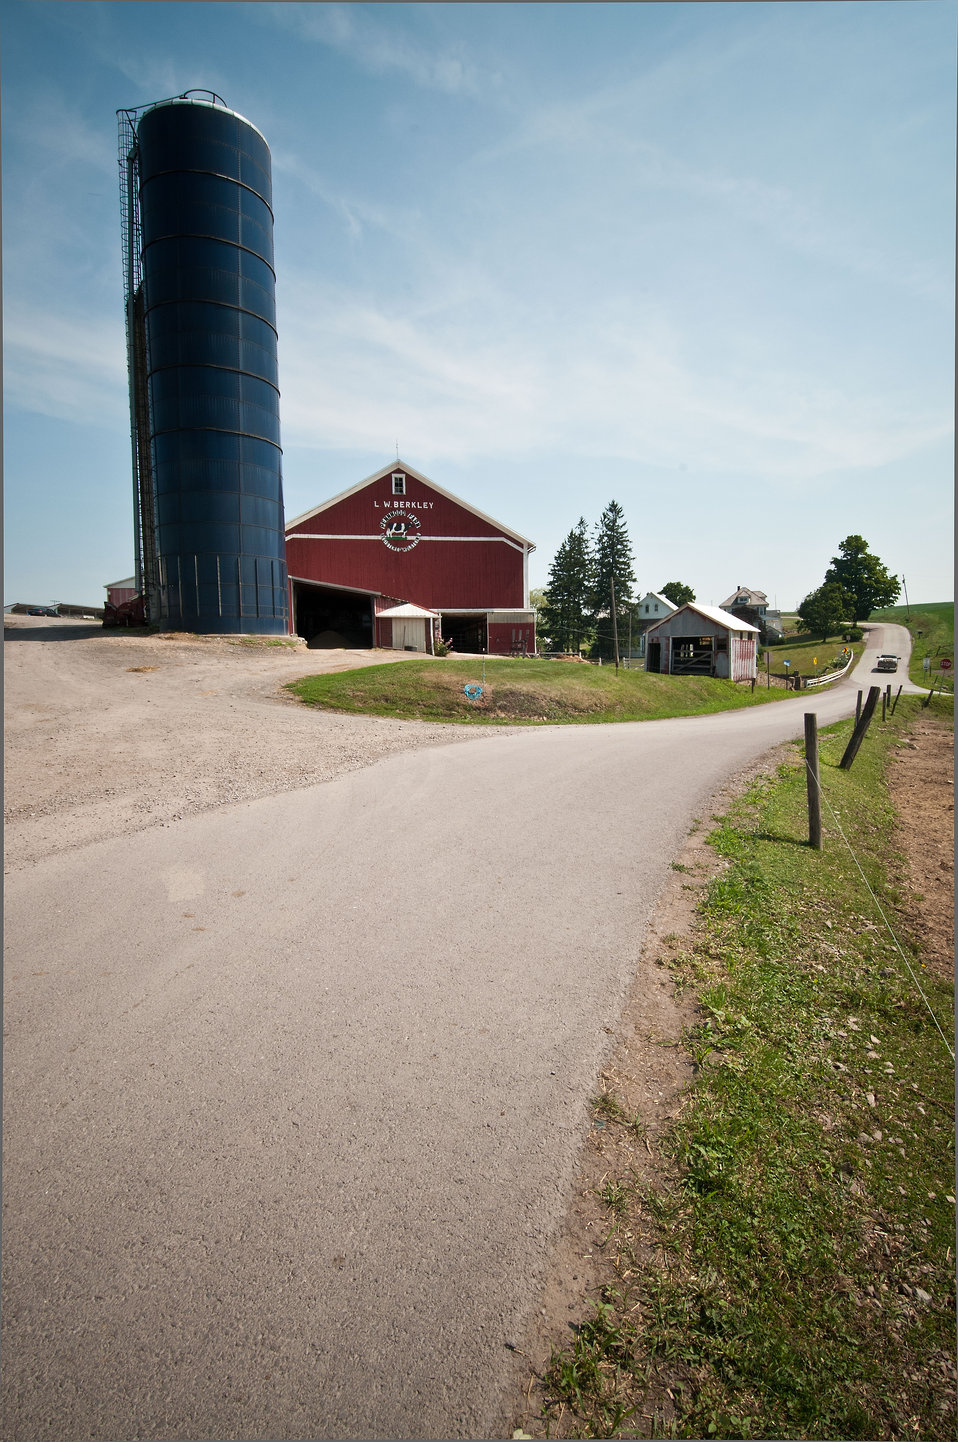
Pennwood Dairy Farms owned and operated by the Stoltzfus family in Berlin, PA. The dairy uses an anaerobic digester to produce energy for the dairy. The digester produces one million kilowatt hours; half of the energy needs of the farm, the other five hundred thousand kilowatt hours are sold back to the grid. An anaerobic digester is a component of a waste management system that provides biological treatment in the absence of oxygen. The digester captures biogas for energy production, manages odors, reduces the net effect of greenhouse gas emissions, and reduces pathogens. The anaerobic digester practice is part of a planned conservation management system that manages manure and/or comprehensive nutrient management system. Agriculture Secretary Tom Vilsack visited the dairy on Tuesday, July 17, 2012. During his visit Secretary Vilsack highlighted the U.S. Department of Agriculture's (USDA) energy efficiency programs and announced a new effort to help rural consumers make affordable, energy-efficient improvements to their homes and businesses.